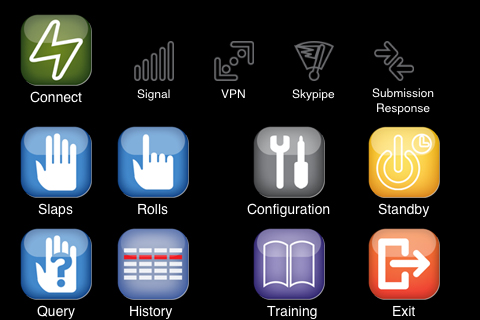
Mobile Fingerprint ID

Prototype 'Quick Capture Platform' mobile fingerprint device running on a smart phone